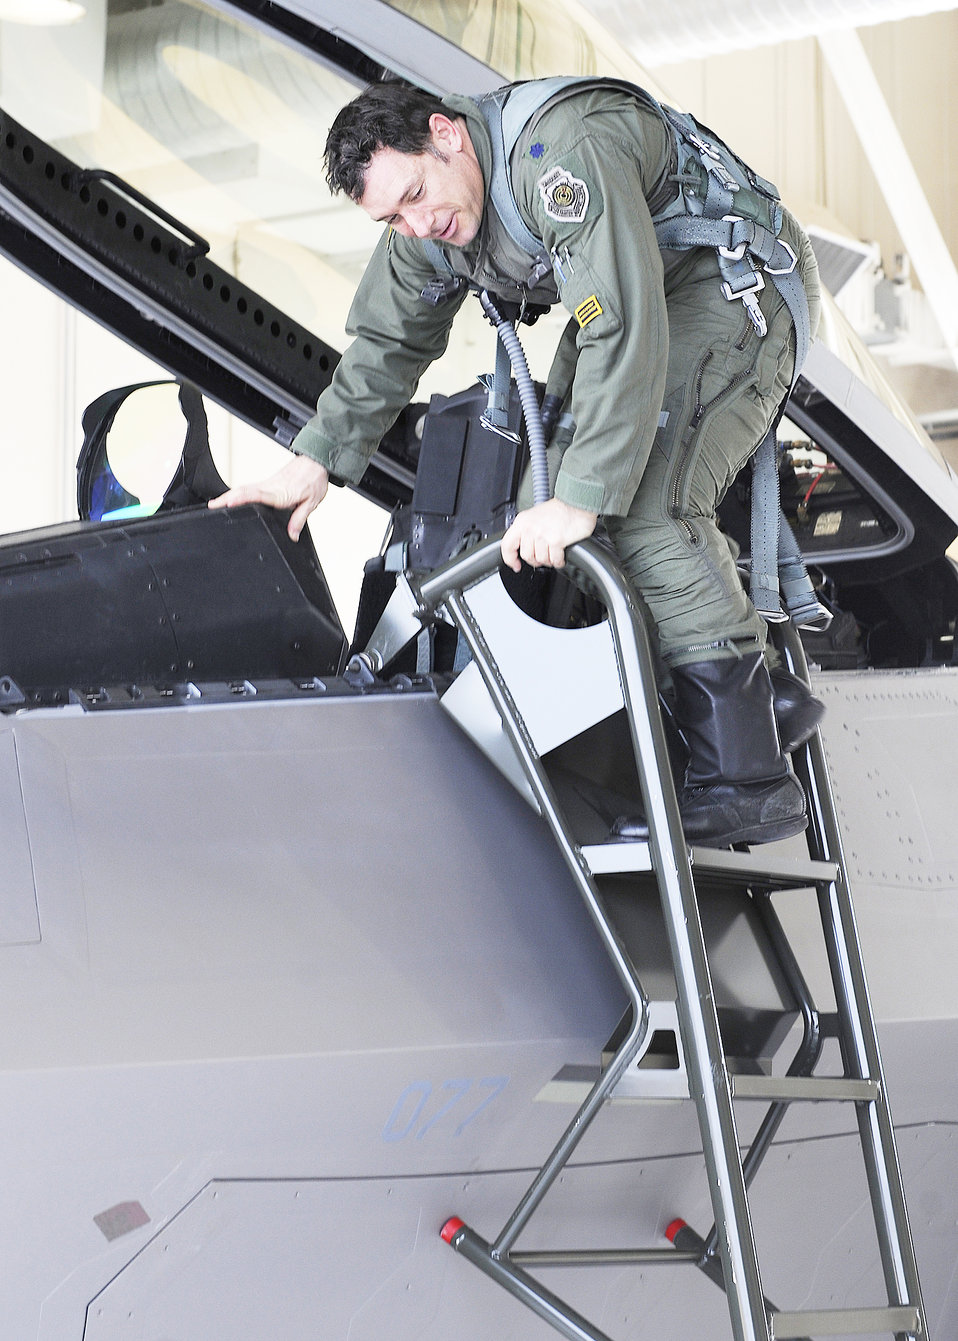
8th FS flagship arrives

Lt. Col. Craig Baker exits the first F-22 Raptor assigned to the 8th Fighter Squadron after flying it to Holloman Air Force Base, N.M., Dec. 21, 2009. The arrival of 8th FS flagship starts the next chapter of the storied history of the Black Sheep that began in 1941 when the squadron was assigned to the 49th Pursuit Group. Colonel Baker is the 8th Fighter Squadron commander.